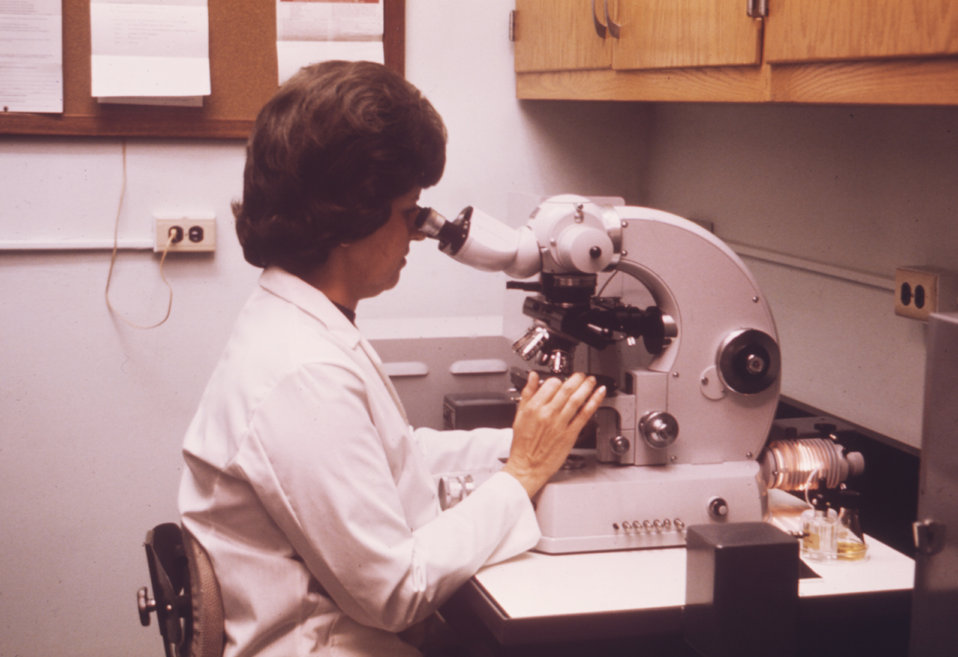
This laboratorian is shown photographing metaphase spreads in an amniotic fluid cell culture.